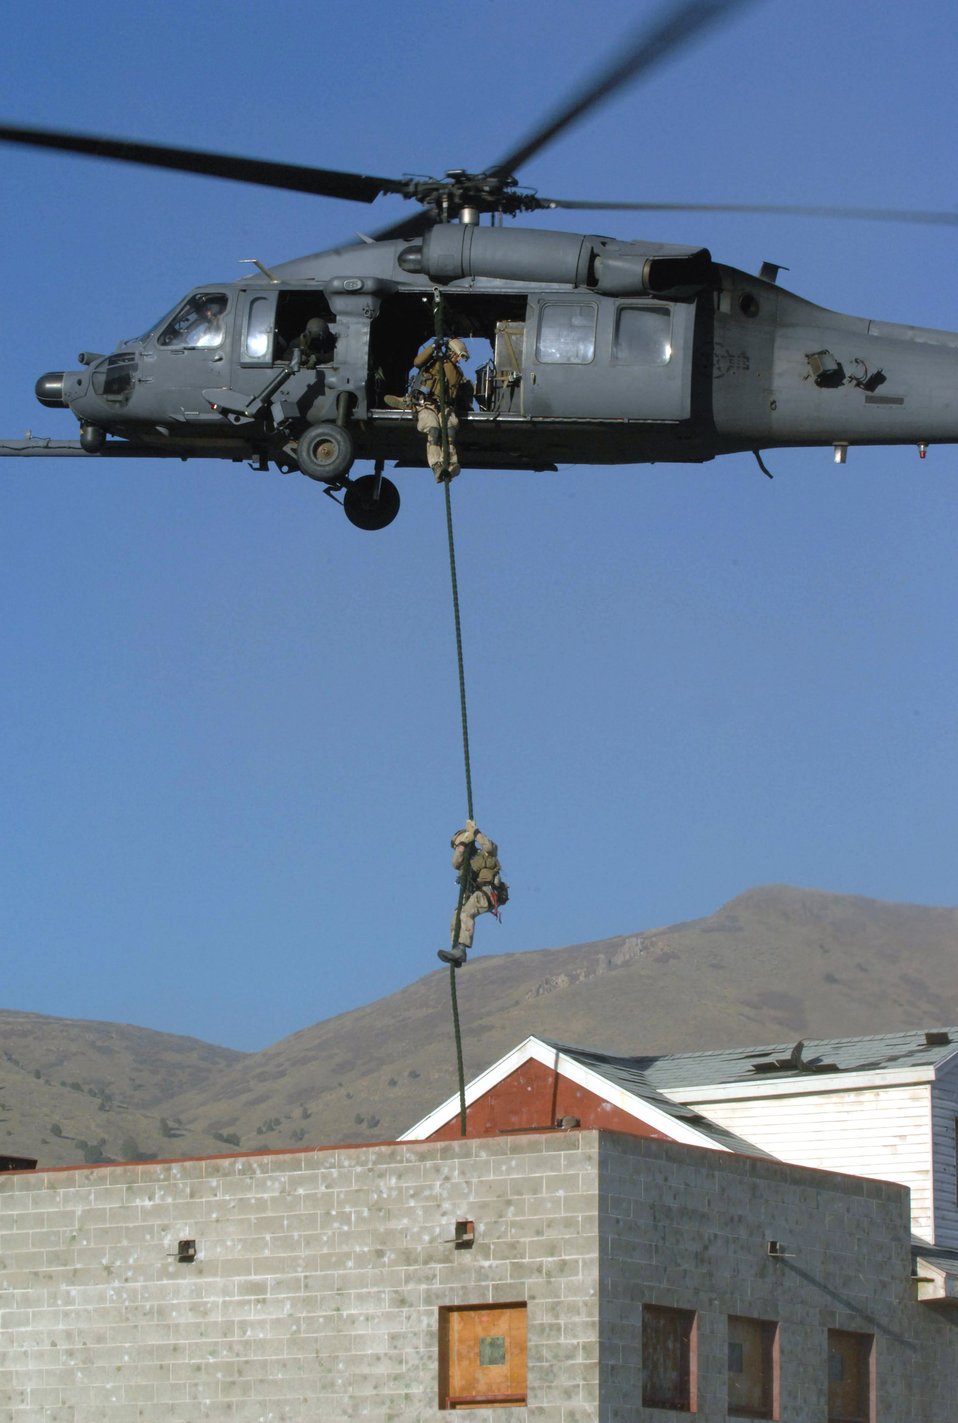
Combat search and rescue training in Utah

Pararescuemen fast rope into an urban training village for an extraction of a simulated downed pilot during a combat search and rescue integration exercise Nov. 8 at Camp Williams, Utah. The pararescuemen are from the 58th Rescue Squadron, Nellis Air Force Base, Nev. Members of the 34th Weapons Squadron from Nellis AFB led the search and recovery training. The exercise expanded the integration with Utah's 211th Aviation Group AH-64 Apache Joint Rotary Wing, 4th Fighter Squadron F-16 Fighting Falcon assets from Hill AFB, Utah, and special operations forces. Exercise participants also conducted extensive joint combat search and rescue operations against surface-to-air threats. The exercise is being run held Nov. 6 through 15.